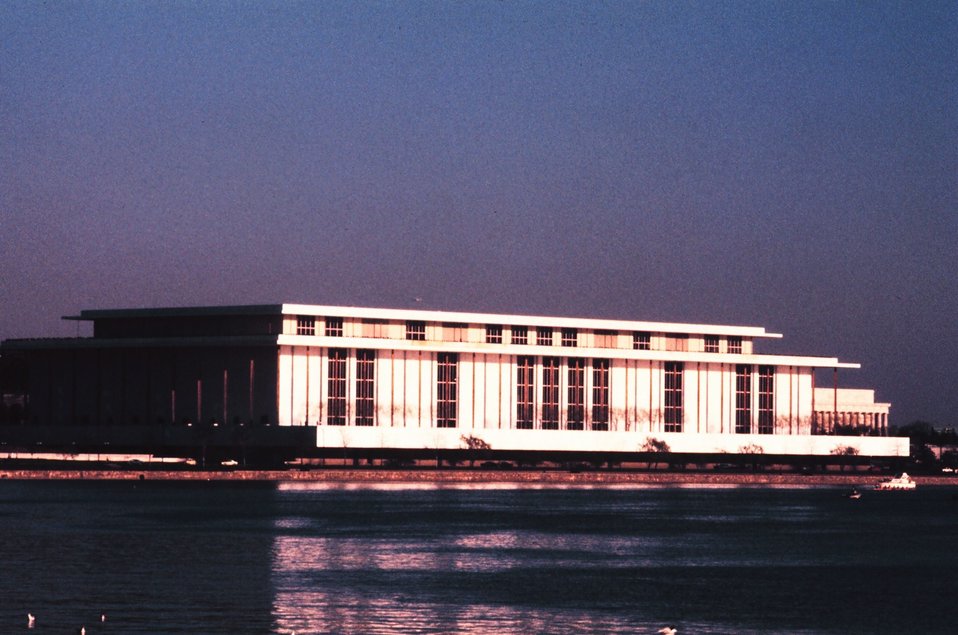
A late afternoon shot of the Kennedy Center as seen from the Potomac